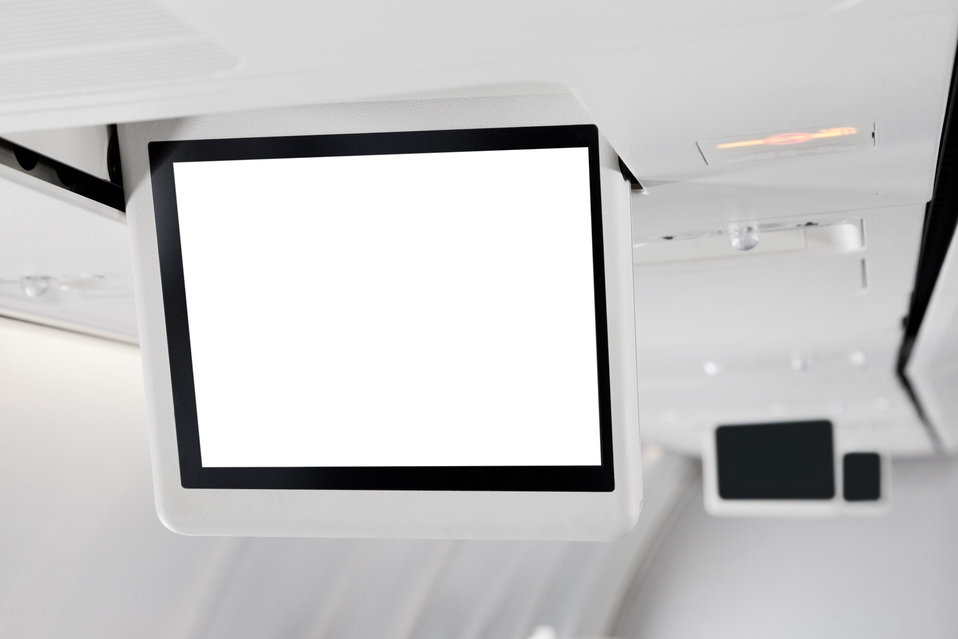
Blank screen in a plane

A blank tv screen in an aeroplane.